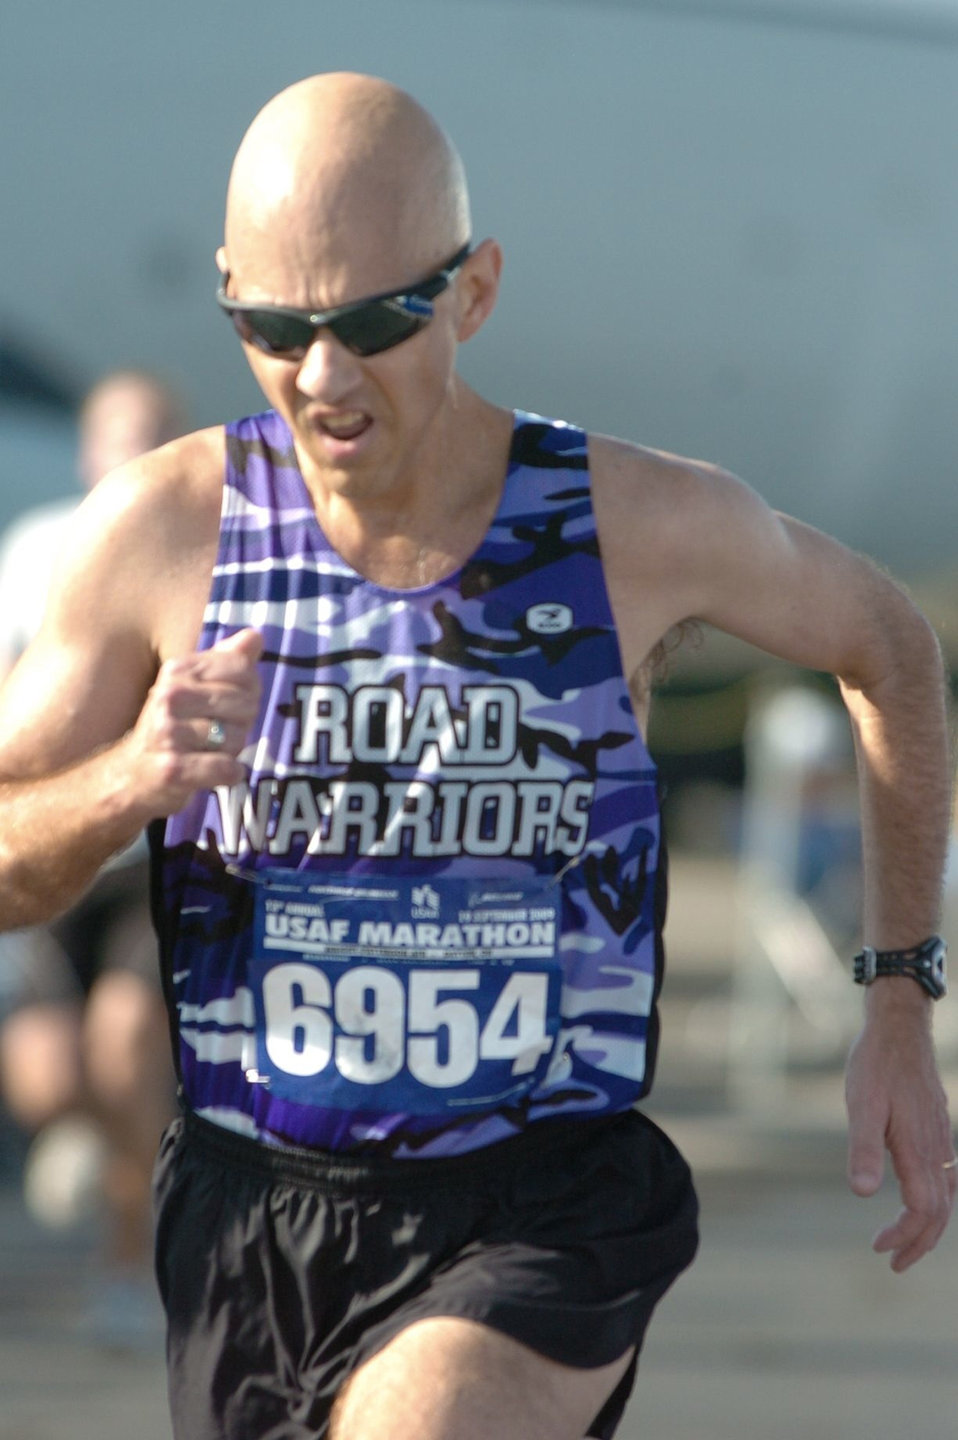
Wingman helps cancer survivor meet Air Force Half Marathon goal

Master Sgt. Mike Sanders runs for the finish line during the Air Force Half Marathon Sept. 19, 2009, at Wright-Patterson Air Force Base, Ohio. Sergeant Sanders ran the event one year and eight months after beating cancer.